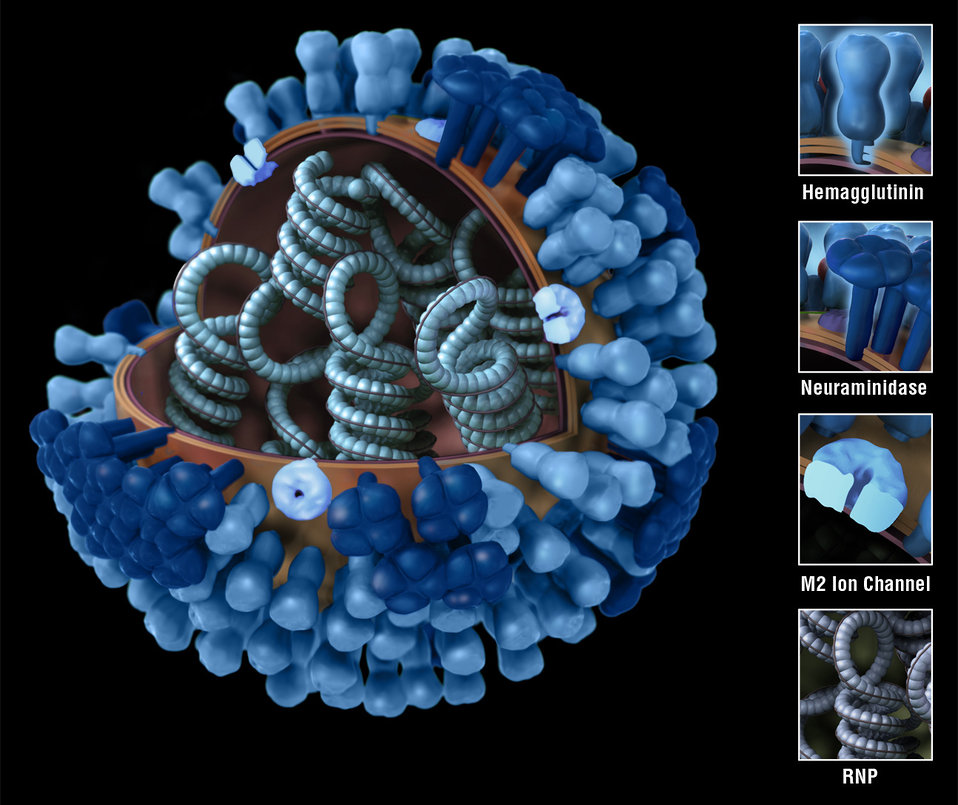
On a black background, this illustration provides a 3D graphical representation of a generic influenza virion's ultrastructure, and is not specific to a seasonal, avian or 2009 H1N1 virus. A portion of the virion's outer protein coat has been cut away, which reveals the virus' contents, and a key has been included, which identifies these components. See PHIL 11874 for an uncut view of the virion's exterior.